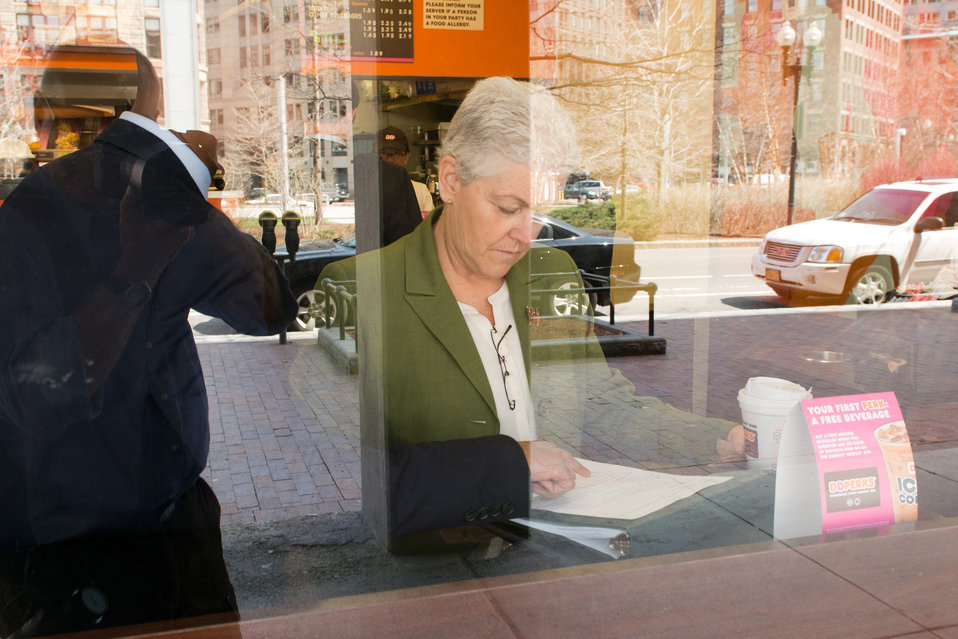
A Day In The Life of the EPA Administrator - April 22, 2014 11:32 am